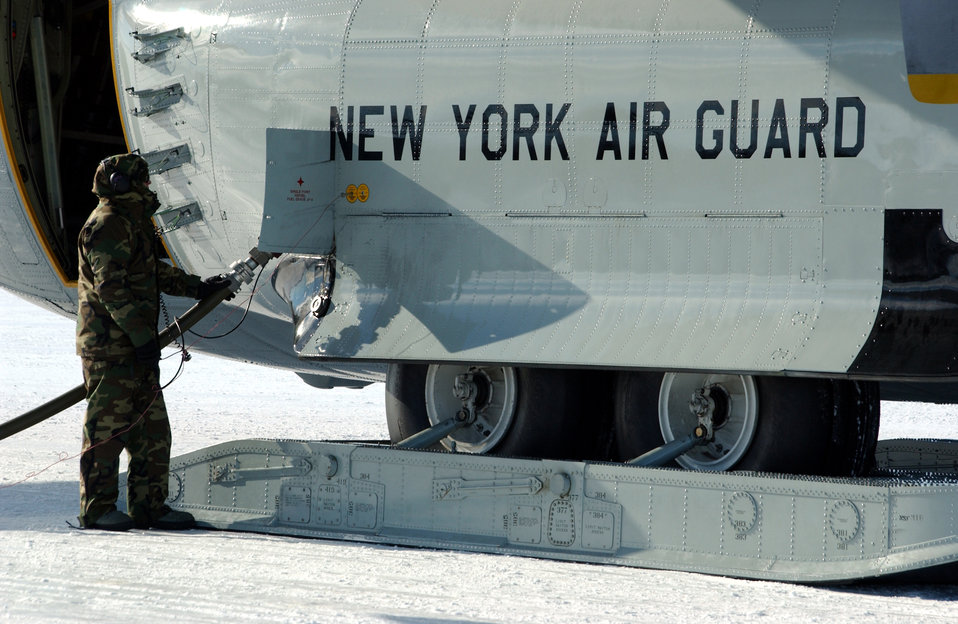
Operation Deep Freeze

WILLIAMS AIR FIELD, Antarctica (AFPN) -- Staff Sgt. Jim Touchette refuels an LC-130H here in support of Operation Deep Freeze. Touchette and the aircraft are assigned to the New York Air National Guard's 109th Airlift Wing at Stratton ANG Base.